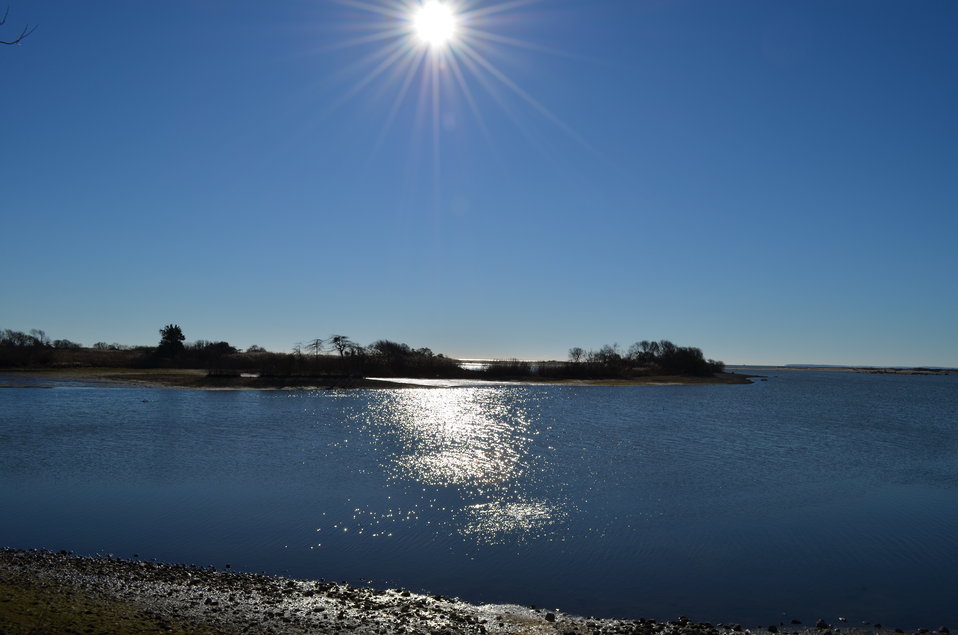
Sunshine reflects on Trustom Pond (RI)

Rays of sunshine reflect on the shallow waters of Trustom Pond National Wildlife refuge.